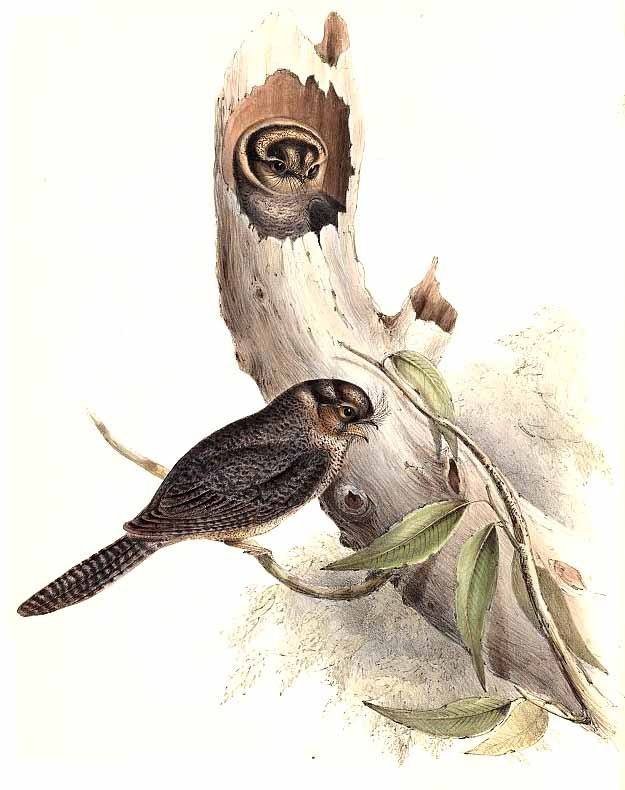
603 aegotheles